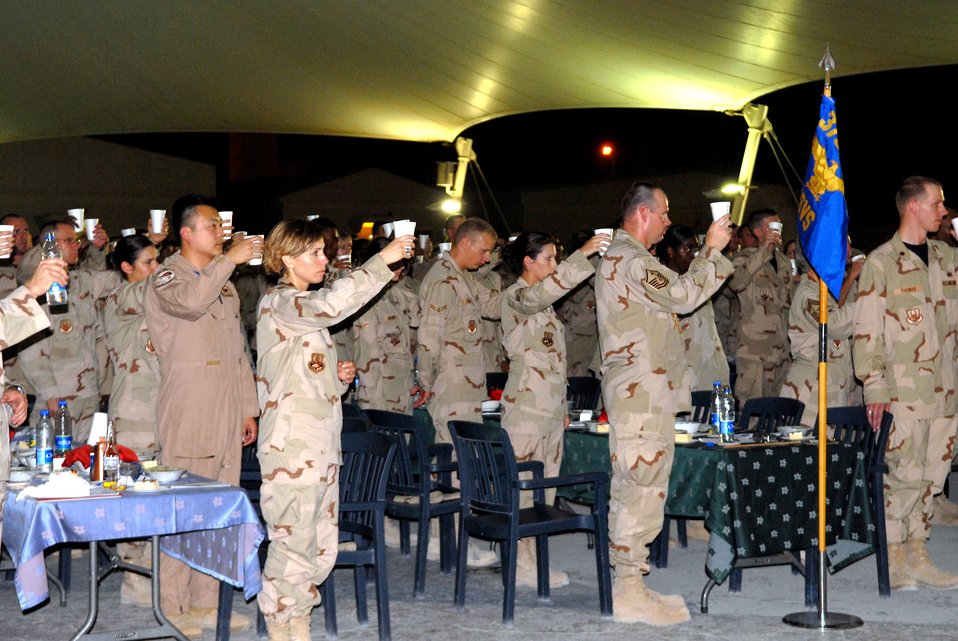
In celebration of the 60th anniversary

Members of the 379th Air Expeditionary Wing hold their drinks up in a toast during a dining-in event in Southwest Asia Sept. 18. The dining-in was the final event of a week-long celebration of the Air Force's 60th anniversary.